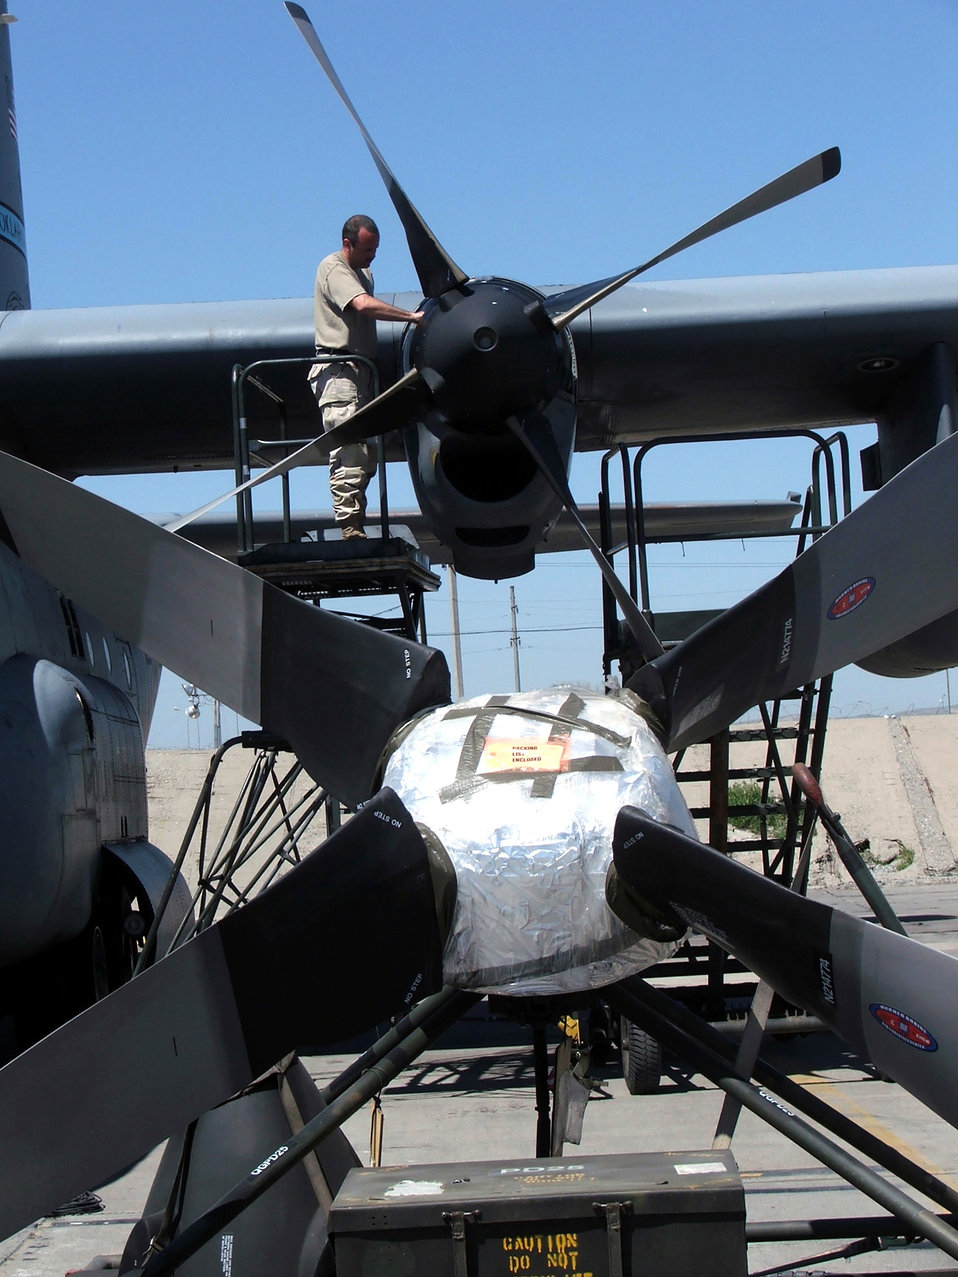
Checkin' before changin'

KARSHI-KHANABAD AIR BASE, Uzbekistan -- Tech. Sgt. Brian Whitt works on a C-130 Hercules engine as he and other maintainers prepare to do a propeller change here April 16. He is a C-130 engine mechanic with the 774th Expeditionary Airlift Squadron and is deployed from the Delaware Air National Guard at New Castle.